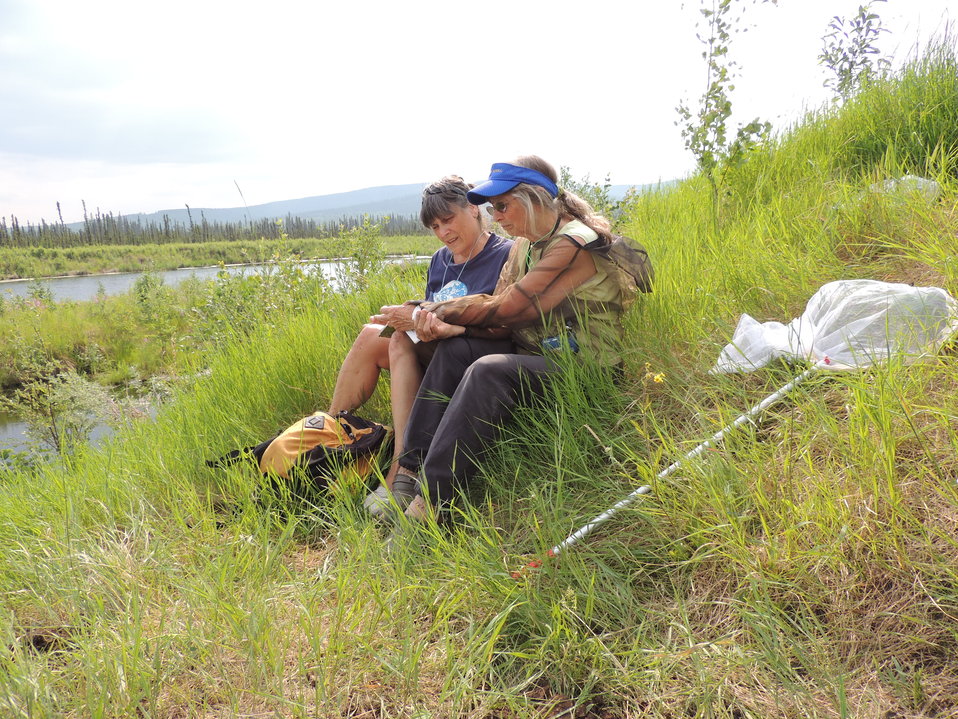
Dragonfly Day 2013

(USFWS)